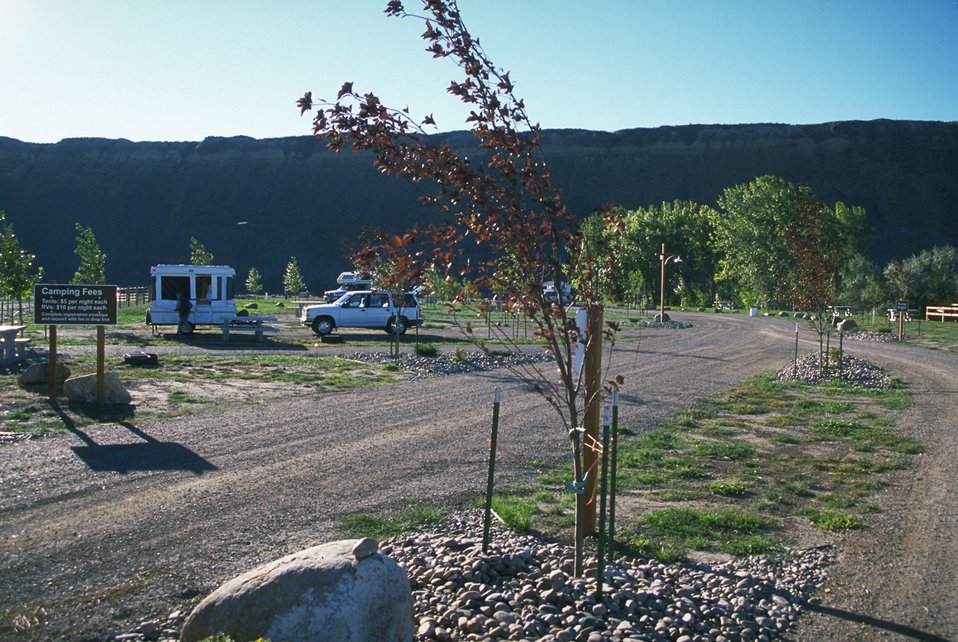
Canoe launch campgrounds at Fort Benton fairgrounds